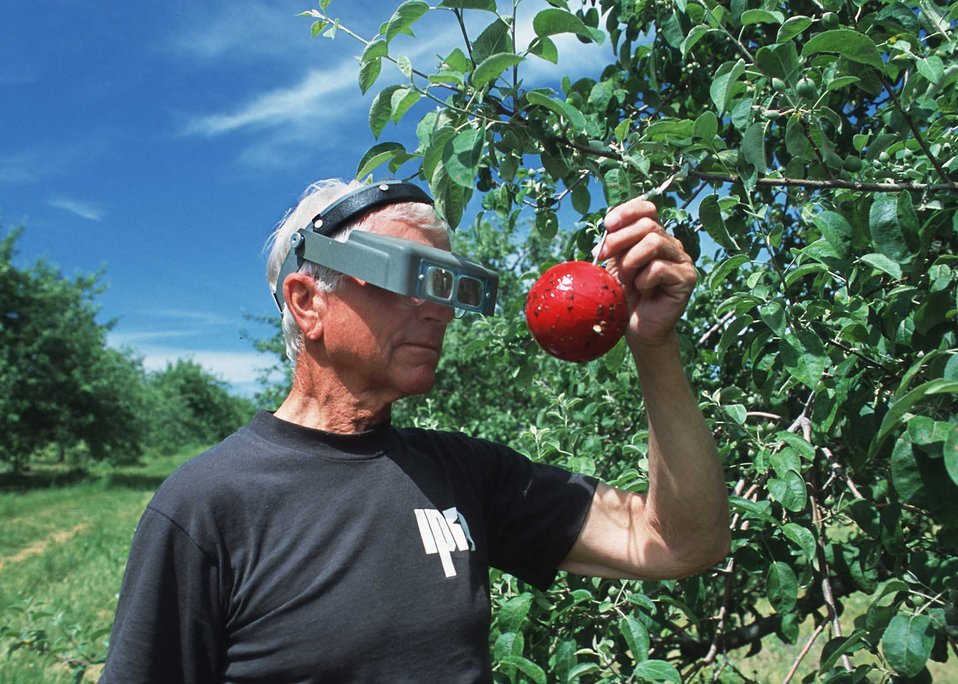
Michigan State University pest management specialist inspecting an apple orchard in Grand Traverse County, Michigan.